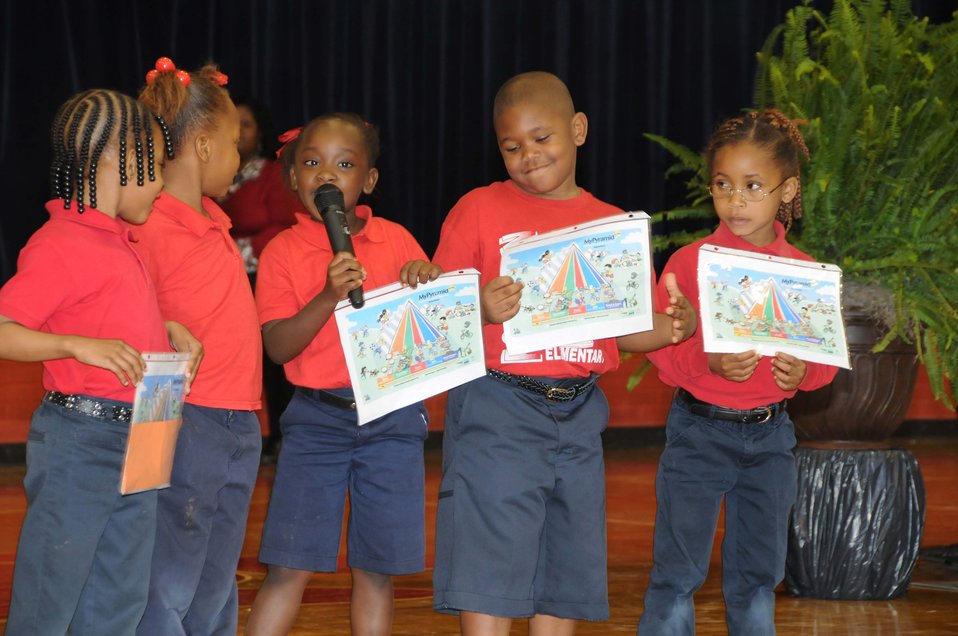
Students at F.S. Ervin Elementary School in Pine Hill, Ala., talk about the benefits of healthy eating at their HealthierUS School Challenge Gold Award of Distinction Ceremony